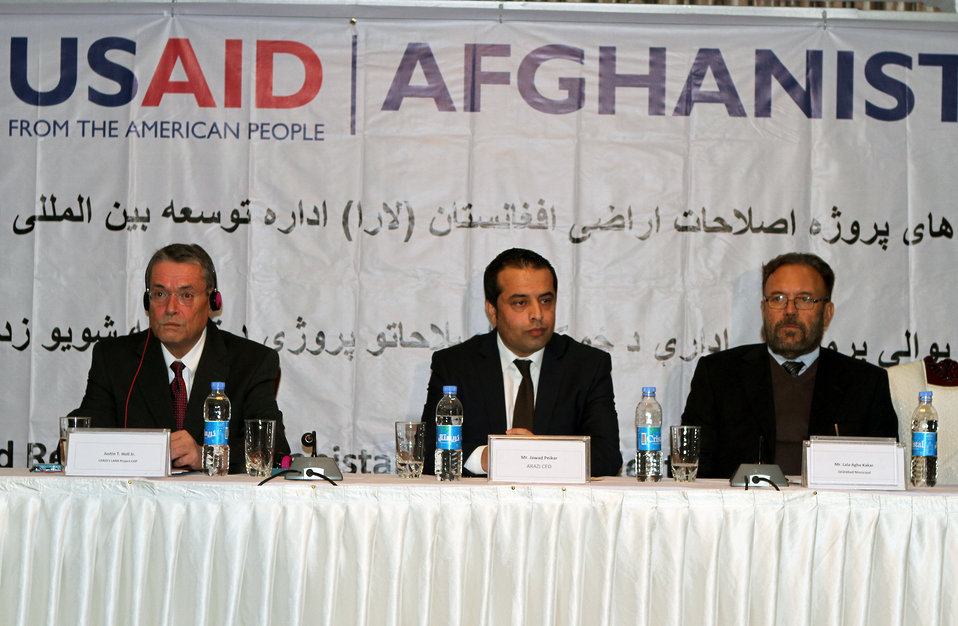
USAID Land Reform Project